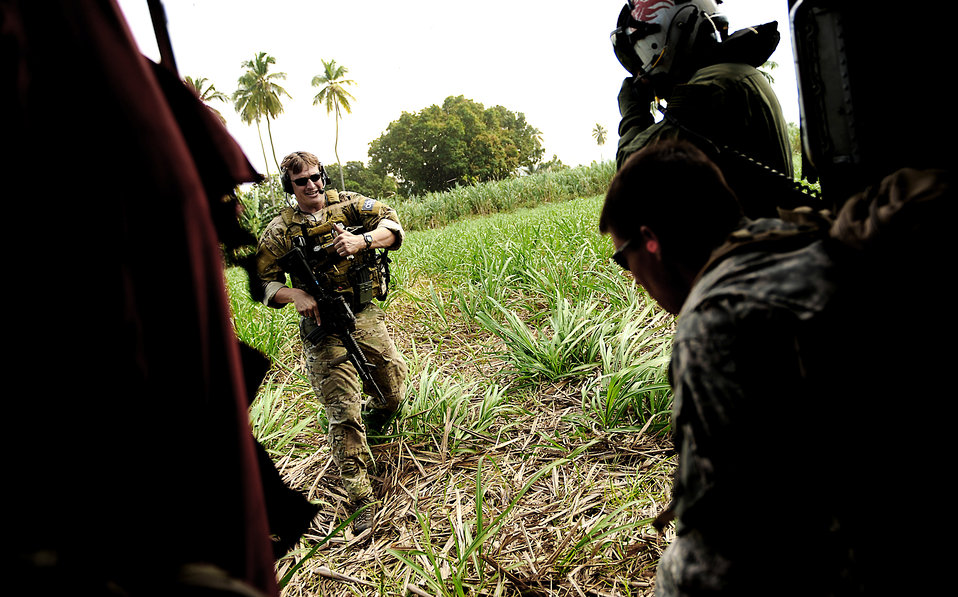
Joint team conducts drop zone survey

A U.S. Air Force combat controller returns to the U.S. Navy HH-60 Seahawk during a drop zone survey outside Port-au-Prince, Haiti, Jan. 24, 2010, during Operation Unified Response.